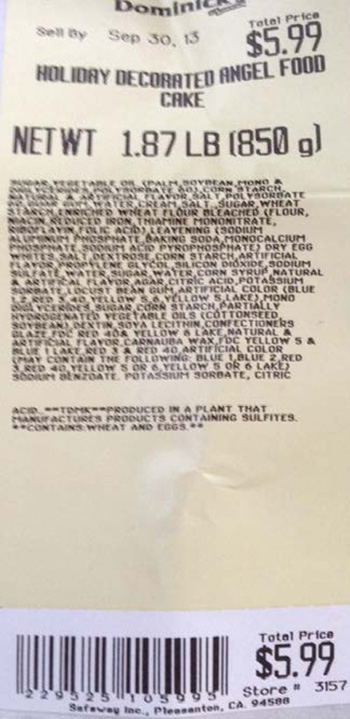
RECALLED – Angel Food Cakes

September 26, 2013 – Product Recall – Safeway Recalls Several Varieties of Angel Food Cake Due to Undeclared Soy and Milk Allergens.